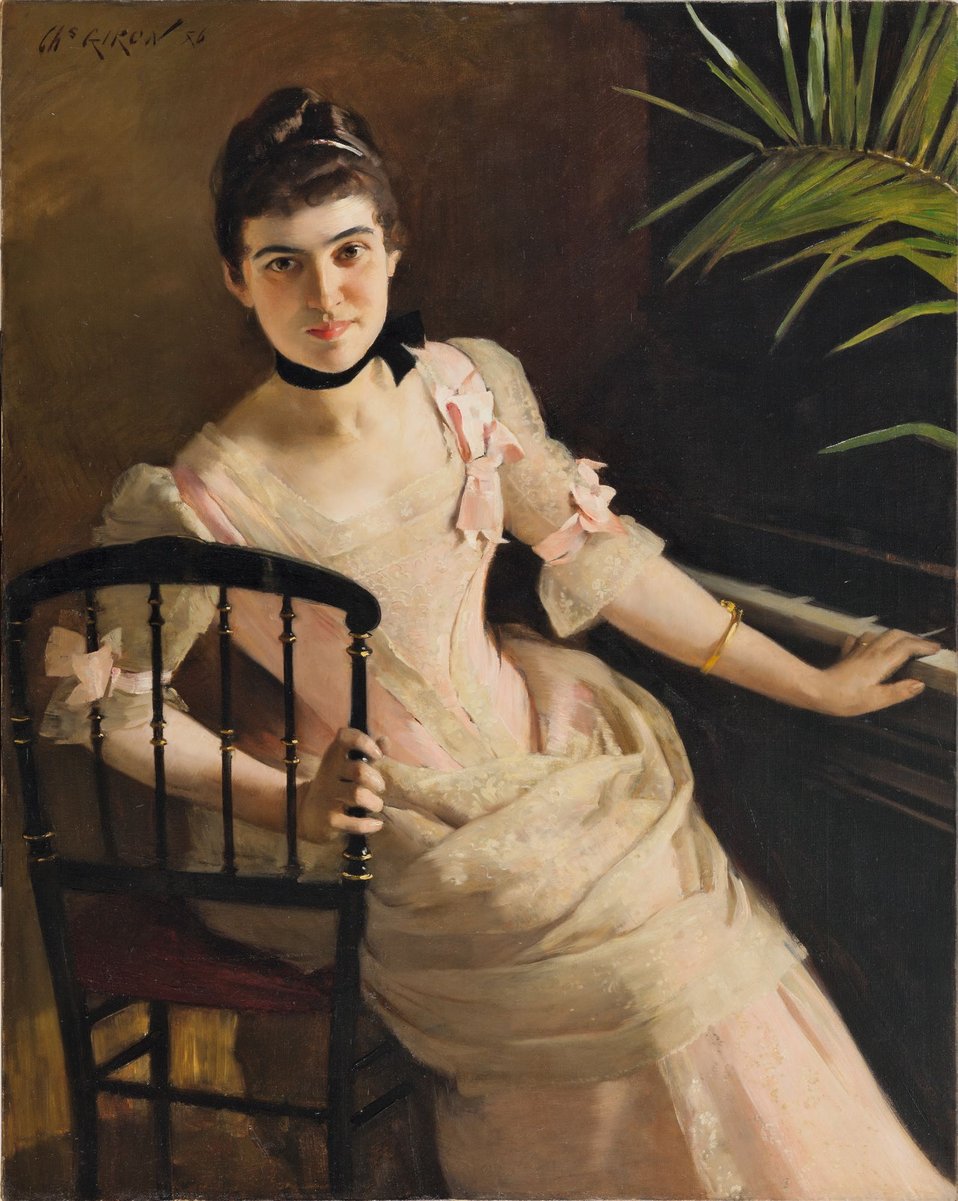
Charles Giron Jeune femme au piano